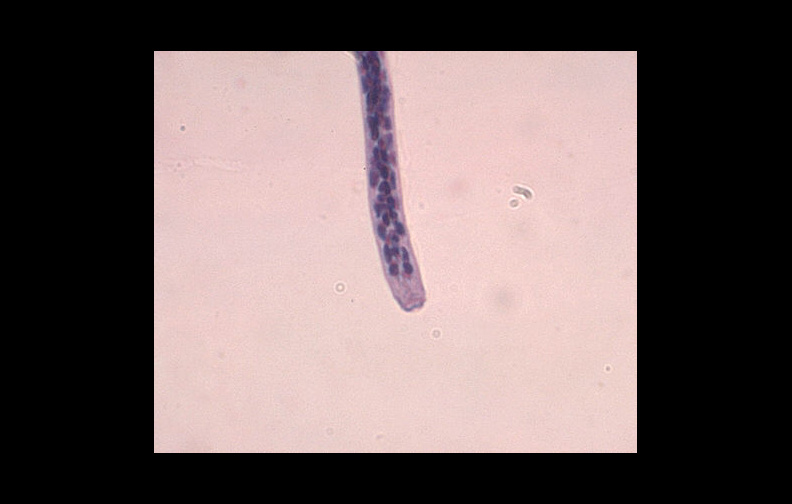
Onchocerca volvulus, anterior end.